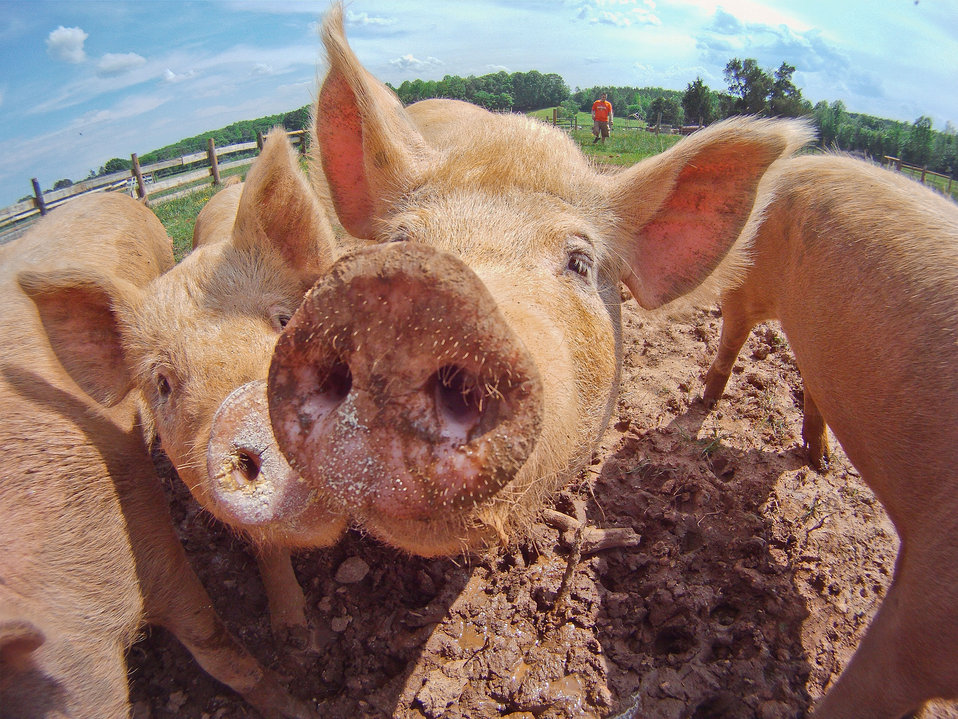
Pigs at Keenbell Farm are pasture raised by 3rd generation farmer CJ Isbell in Rockville, VA, on Friday, May 6, 2011. The farm was established in 1951, and produces grass-fed beef, pastured pork, and free-range eggs beyond organic standards. Keenbell Farms pork products range from sausage, to bacon, pork chops, roasts, bratwurst, and many more. A majority of their diet is grass and roots. They are offered corn, soybean, minerals, and a hay mixture that was developed by the farm. Raising the pigs on pastures reduces odor problems, and avoids hazardous waste issues by distributing the manure. Pastures are rotated at least, every 90 days to allow the grass and land to re-grow. Keenbell and other farms produce meat products for Fall Line Farms food hub that offer a wide variety of household food staples and specialty items. Members can pick their customized orders from an ever changing inventory of fruits, vegetables, meats, soaps, eggs, cheeses, flowers, honey, pastas, sauces, syrups, baked goods, mushrooms, flour and grains. Suppliers post what they have to sell on Lulus Local Food online listing where customers can make their selection. Every Thursday, suppliers team up to deliver customized orders to, one of several pick-up points, designated by the customer in or around the Richmond, VA area.